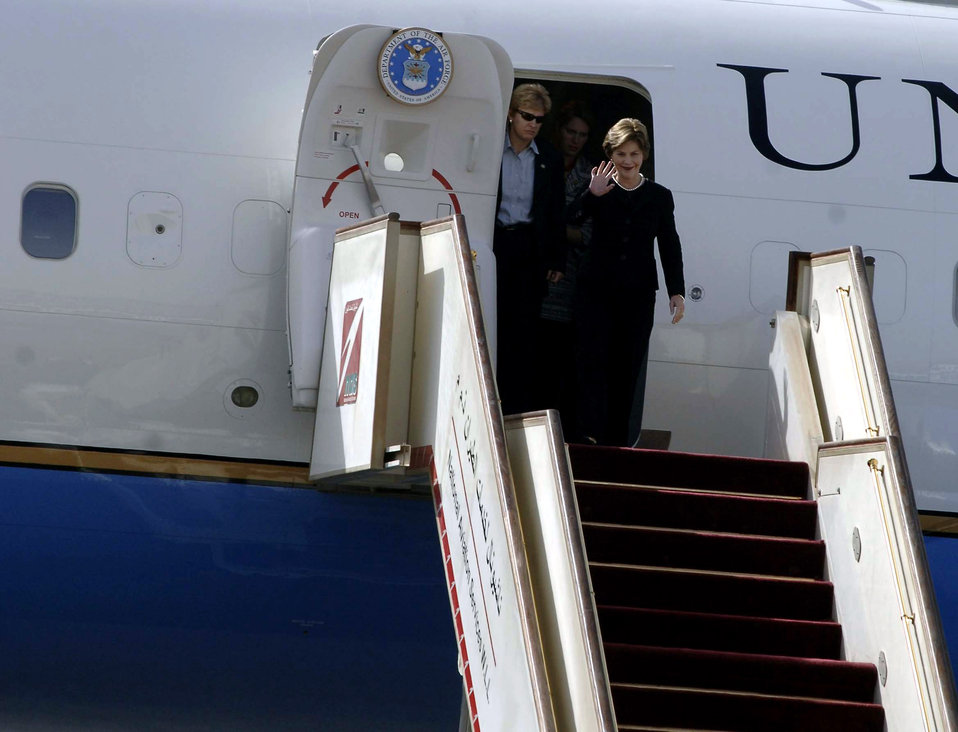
First lady visits Middle East

First Lady Laura Bush disembarks an aircraft Oct.24 at a undisclosed location in Southwest Asia. Mrs. Bush is touring the Middle East visiting American servicemembers. The first lady's visit highlights the accomplishments of the Middle East Partnership Initiative programs of the State Department, and also to visit a number of programs in countries that have launched the U.S. and Middle East partnership for breast cancer awareness and research.